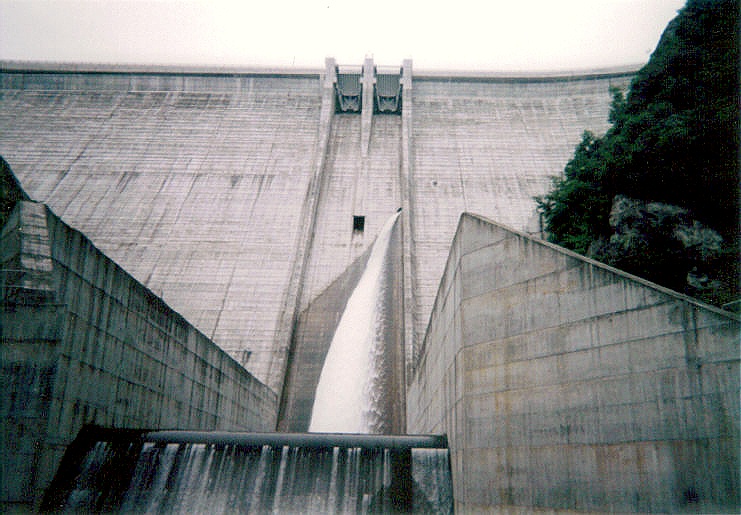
Dam